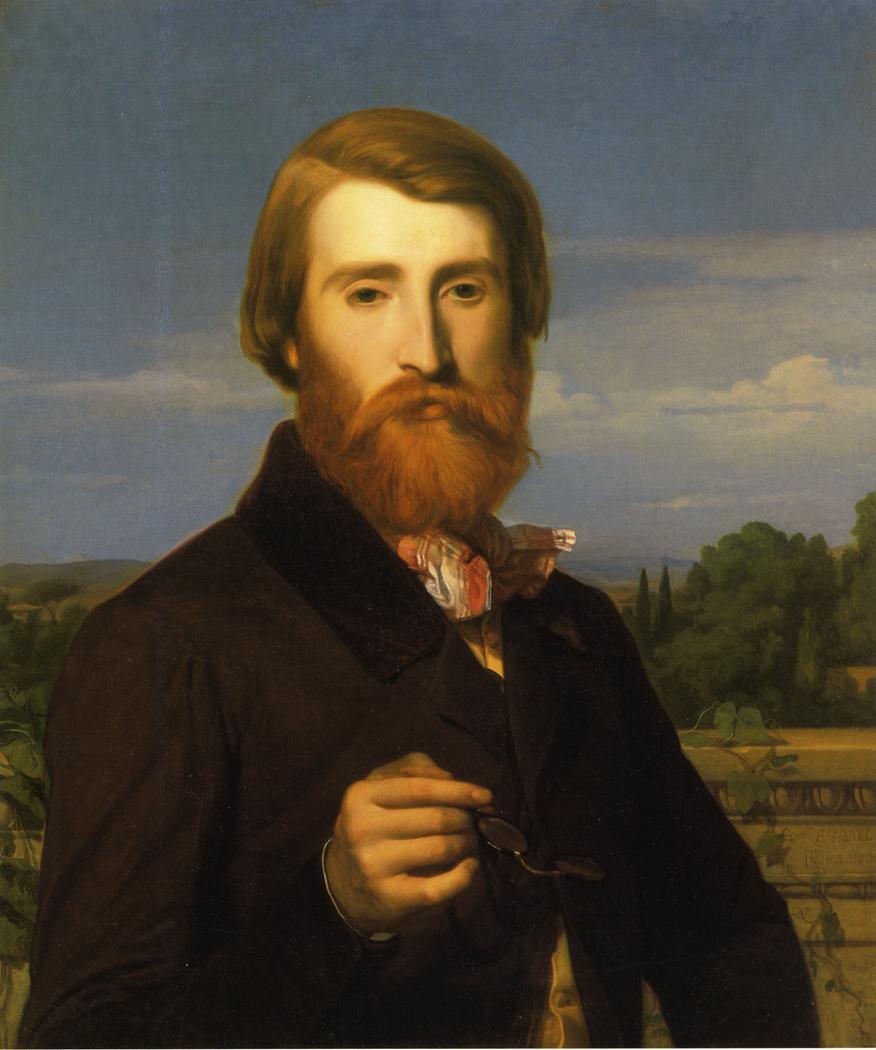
Alexandre Cabanel - Alfred Bruyas